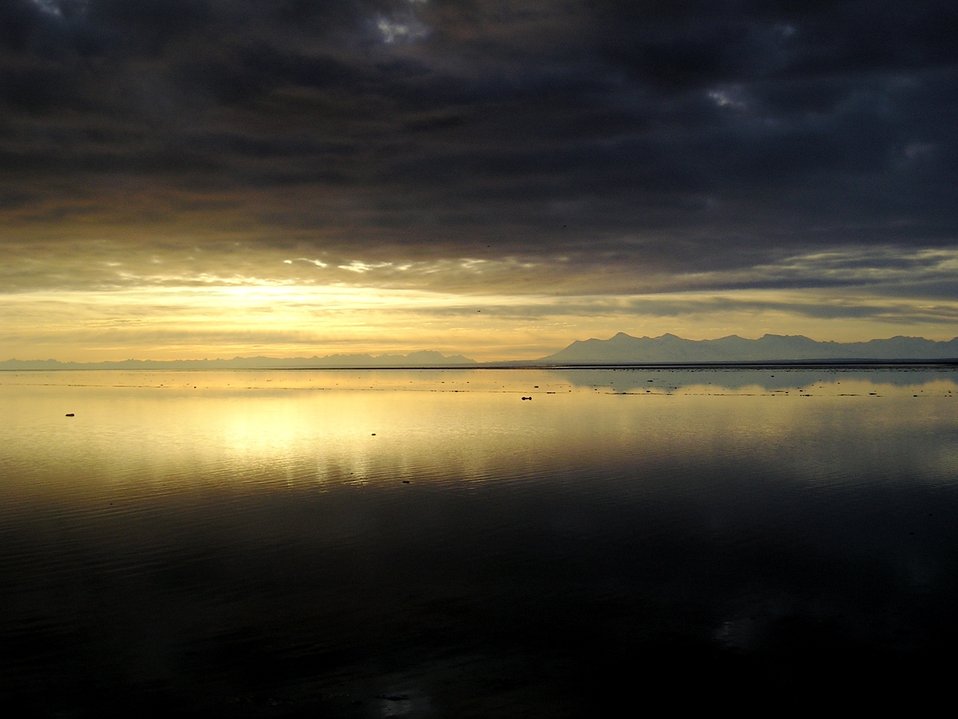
Cook Inlet sunset